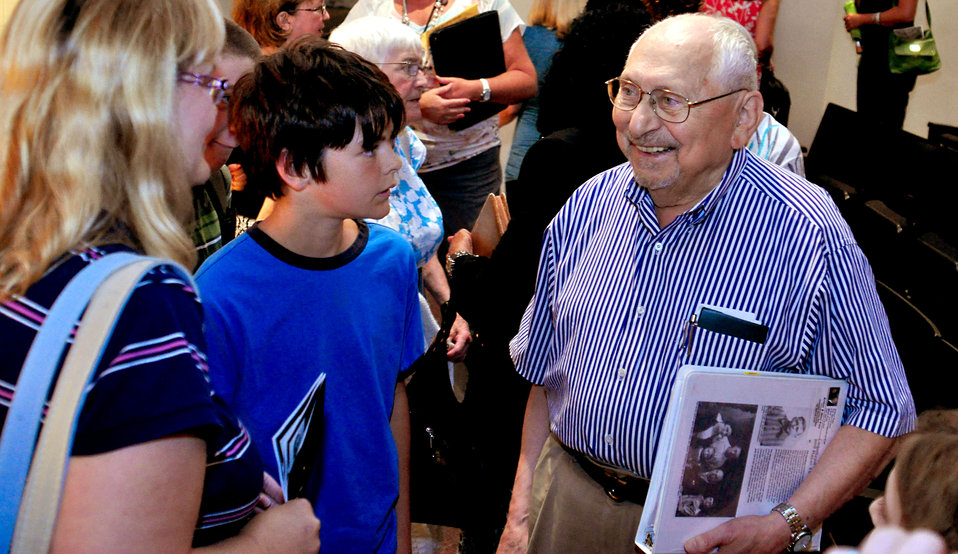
Holocaust Remembrance Program FEW Arthur Pais at AMSE in Oak Ridge

13-096 DOE photo Lynn Freeny 8-8-2013 Oak Ridge Tennessee